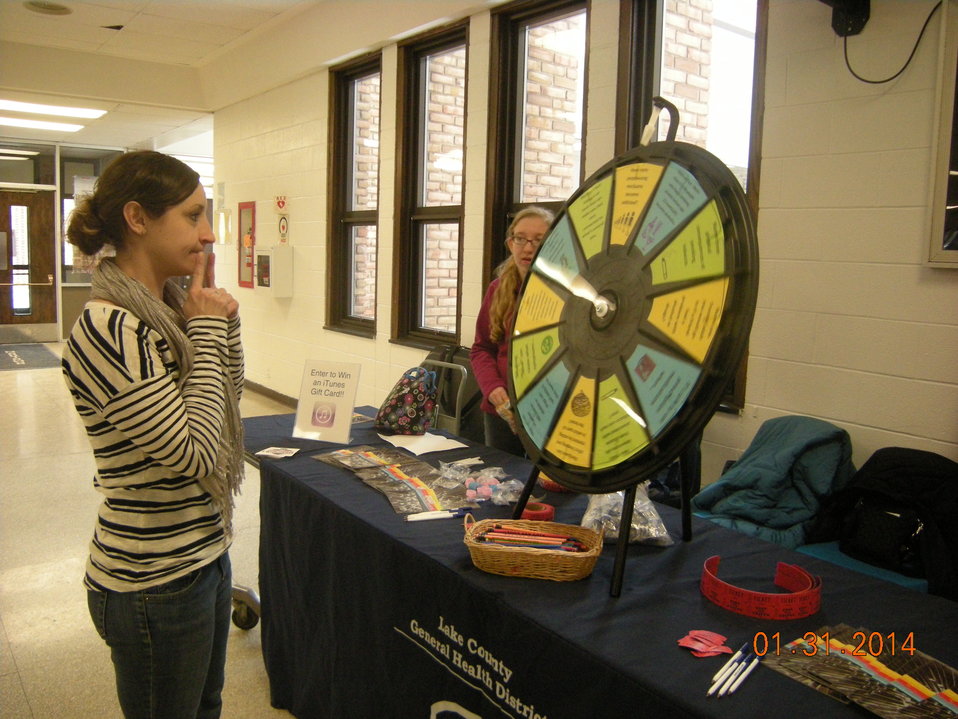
NDFW events held at Madison High School in Ohio on January 31st

This was a partnership between the high school and the Lake County General Health District. Students spun the wheel and answered questions based on information in the Shatter the Myths booklet and those finding the correct answers were entered to win a gift card. It turned out to be a fun day!